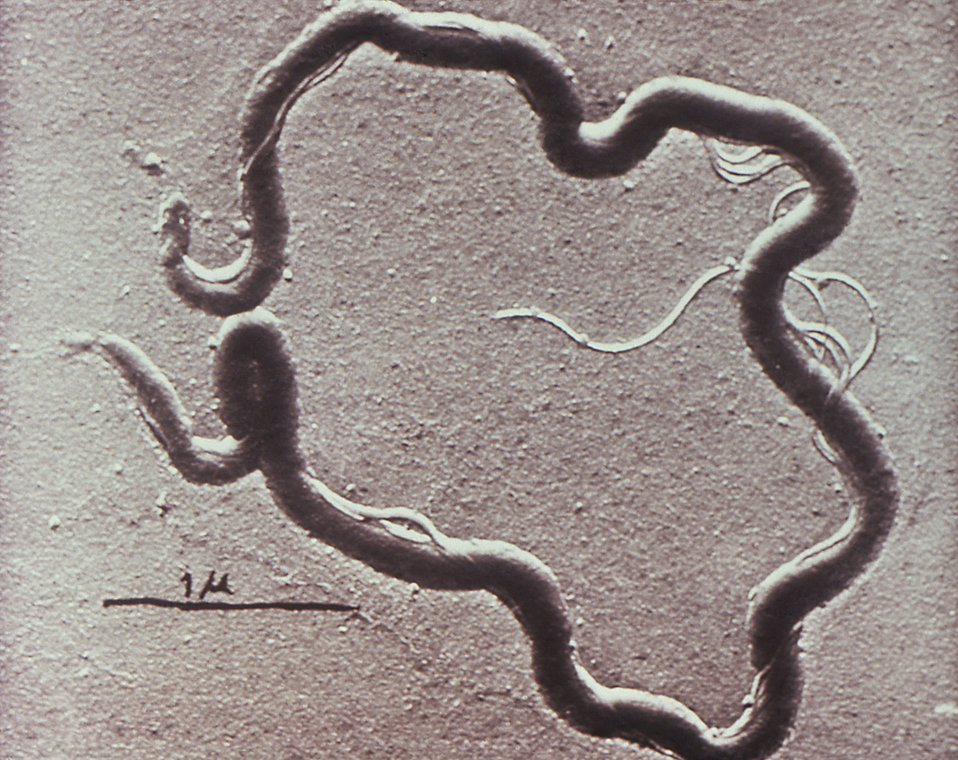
This transmission electron micrograph (TEM) revealed some of the ultrastructural morphology displayed by a spiral-shaped Treponema pallidum spirochete. Note the 1� (micrometer), hand drawn measurement indicator. T. pallidum is the causative agent of syphilis. It contains one of the smallest prokaryotic genomes consisting of about 1000 kilobase pairs.